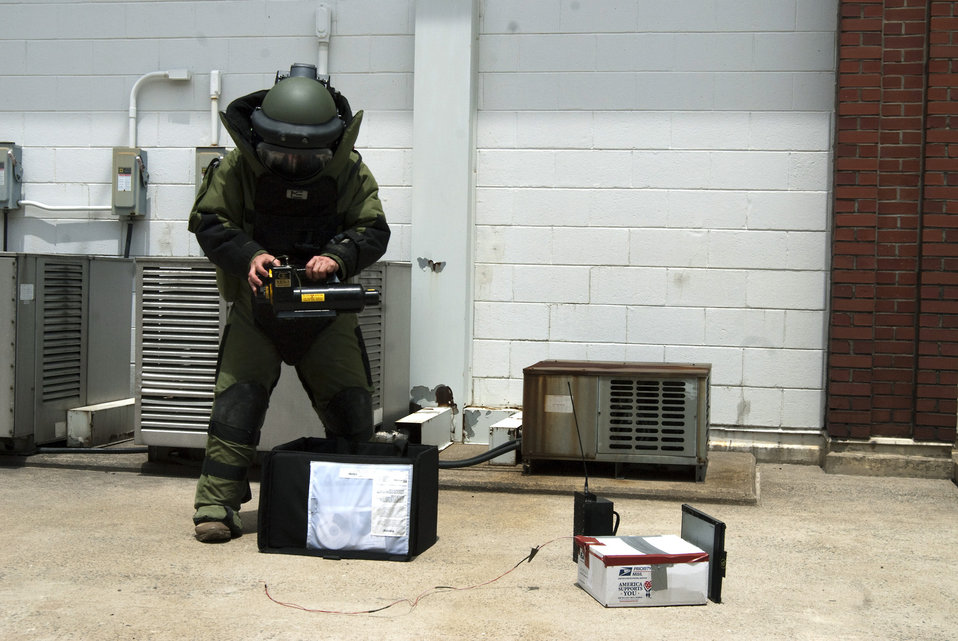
Kunsan Airmen test their skills

Staff Sgt. Wesley Kory wears a protective suit while digitally x-raying a suspicious package at Kunsan Air Base, South Korea, during exercise Beverly Bulldog 10-02 July 12, 2010. The digital x-ray system helps law enforcement, military, customs and security personnel search for explosives, weapons, narcotics and other contraband. Sergeant Kory is an explosive ordnance technician with the 8th Civil Engineer Squadron.